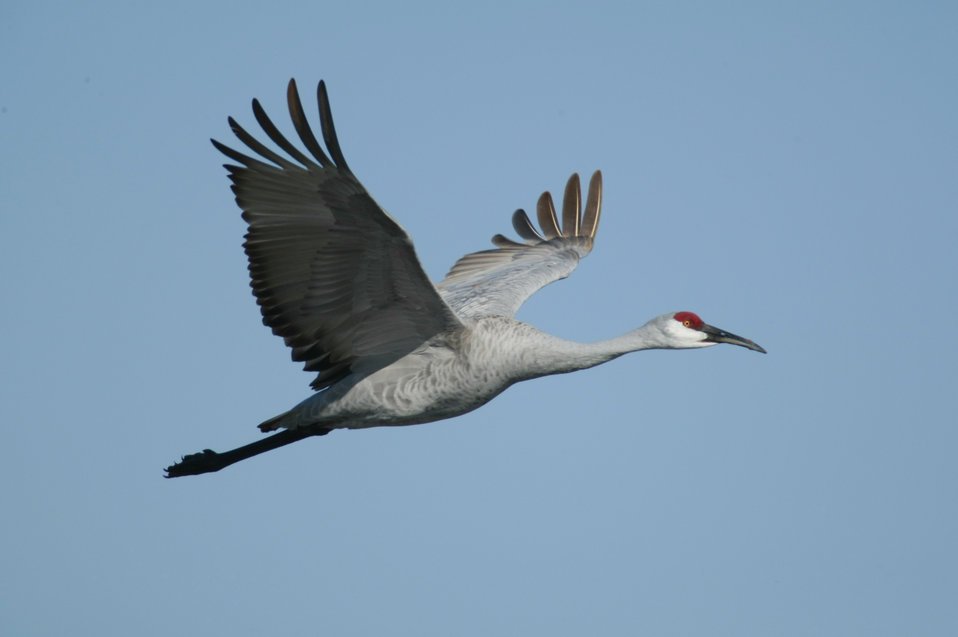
sandhill crane in flight

Sacramento National Wildlife Refuge, CA
Photo: Steve Emmons, USFWS

Sandhill Crane (Grus canadensis)
Observation deck, Sacramento River NWR, Dayton, CA